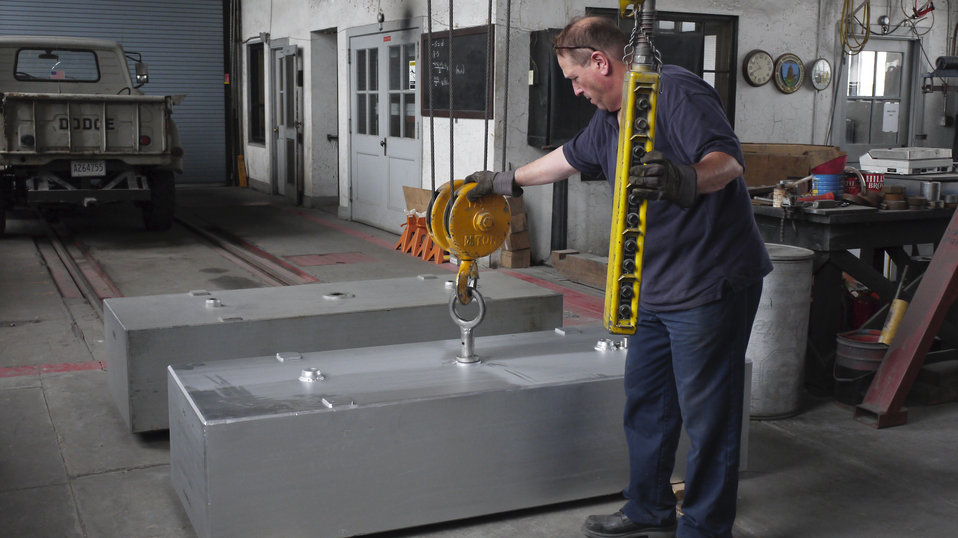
U.S. Department of Agriculture’s (USDA) Grain Inspection, Packers, and Stockyard Administration (GIPSA) industrial specialist Marcus Harwitz calibrates 1000 lb. test weights using USDA GIPSA load cell comparator at USDA GIPSA Master Scale Depot in Chicago, IL on Jul 2, 2013. USDA GIPSA entered into an agreement with the National Institute of Standards and Technology (NIST) and the Association of American Railroads (AAR) in 1980 transferring responsibility to USDA’s GIPSA to maintain the Master Scale facility in Chicago, IL and calibrate all the master scales in the continental U.S. annually.